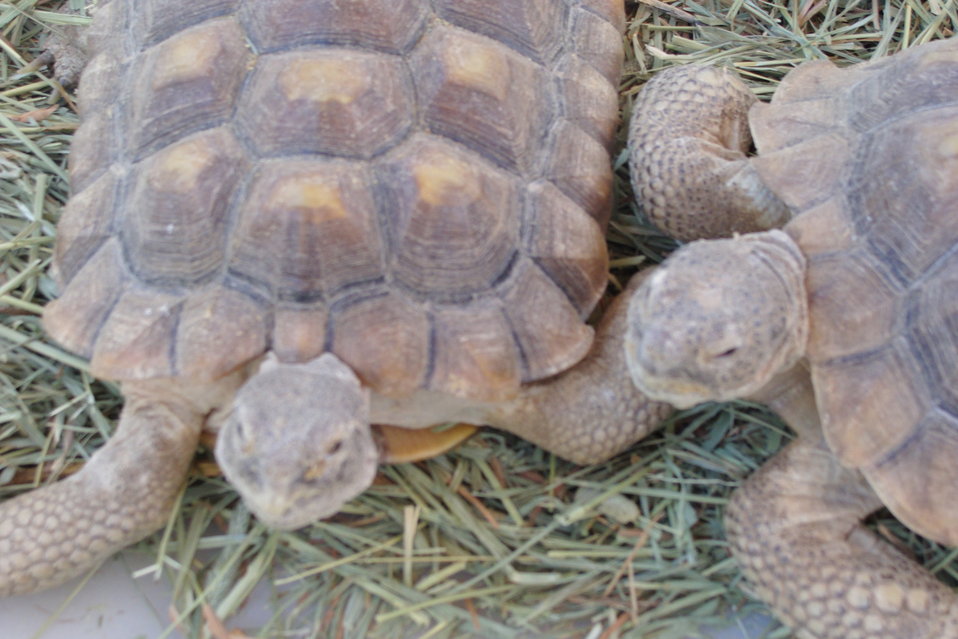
Mojave Desert Tortoise

The U. S. Fish and Wildlife Service has announced the availability of a Revised Recovery Plan for the threatened Mojave population of the desert tortoise (Gopherus agassizii) under the Endangered Species Act (ESA). The Plan takes a new approach to reversing declines in Mojave desert tortoise populations through a coordinated effort of science-based implementation and evaluation of conservation actions.

Unlike the previous Recovery Plan, which focused on mitigation measures, this Plan recognizes the need to adjust to the accelerating pace of environmental change and its impact on key resource management issues, such as corridors and connectivity. The Plan will be a living document that advances a natural resource management model where ongoing detection of changes and attribution of causes will provide the basic information on whether or not the desert tortoise or its ecosystem is changing beyond natural variability.

By continuous examination of vulnerability, exposure, sensitivity, and adaptive capacity of the desert tortoise to environmental change, resource managers will be able to update the Plan as it is being implemented with conservation measures that will help the desert tortoise recover.